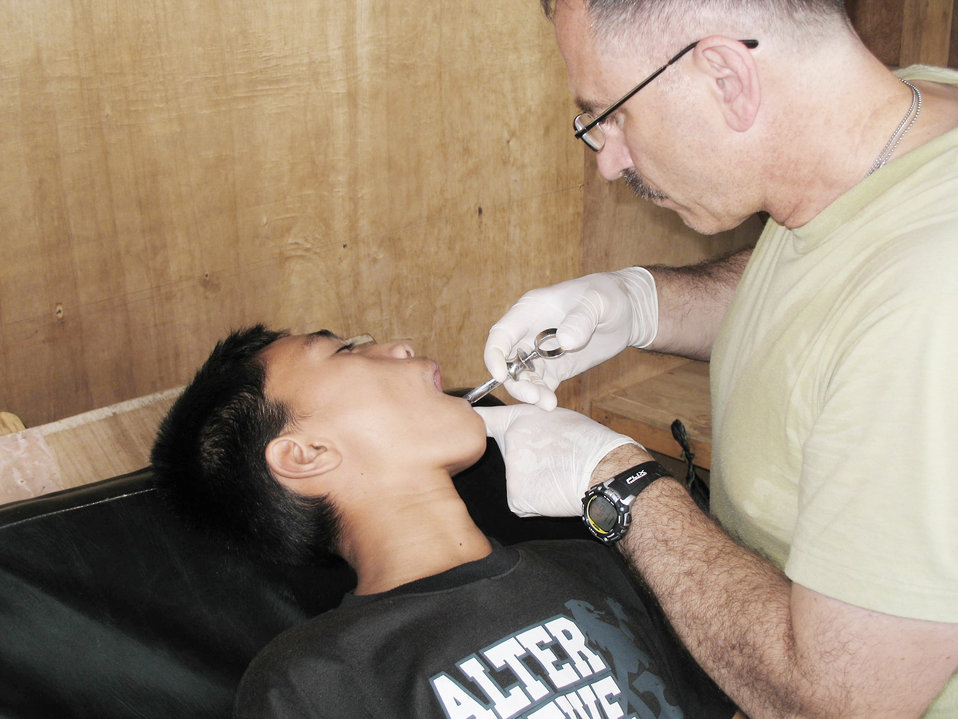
American surgical team making a difference in southern Philippines

Maj. Joseph Bartle administers a dental anesthesia block to a patient receiving dental care Nov. 15, 2009, at Jolo, Philippines. Major Bartle is an orthopedic physician assistant assigned to Joint Special Operations Task Force-Philippines Forward surgical team.